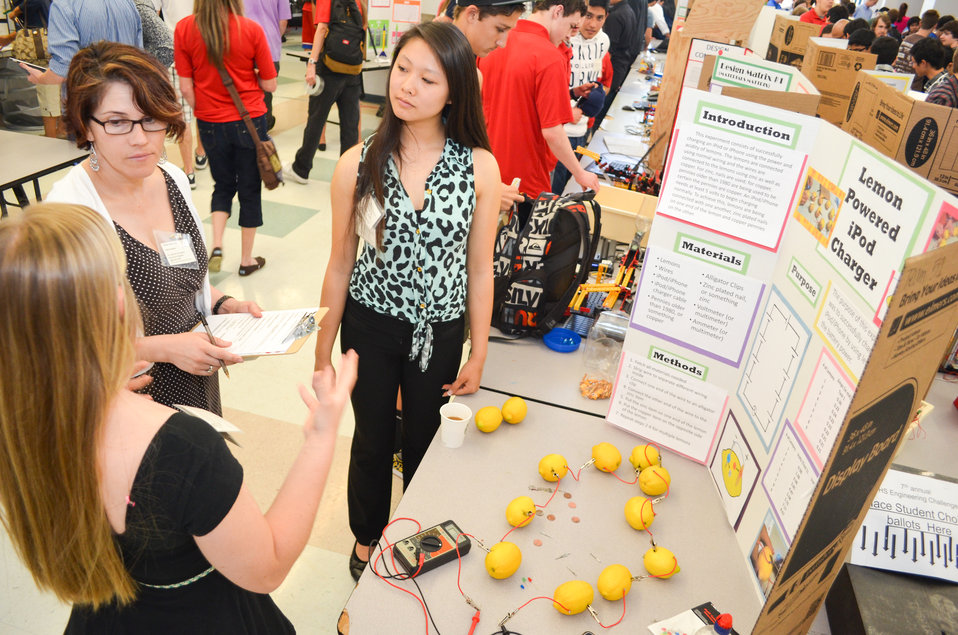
Zeffy Ruvalcaba judges lemon-powered iPod charger

Zeffy Ruvalcaba, a civil engineer with the U.S. Army Corps of Engineers Sacramento District, offers constructive feedback on a lemon-powered iPod charger during Folsom High School's seventh-annual Engineering Challenge April 11, 2014, in Folsom, Calif. Student projects included: hovercrafts, catapults, Tesla coils, electromagnetic propulsion devices, pneumatic wind turbines, voice synthesizers, hydrogen fuel cells, solar electric boats and cars, gene transformation, and orthopedic implants.